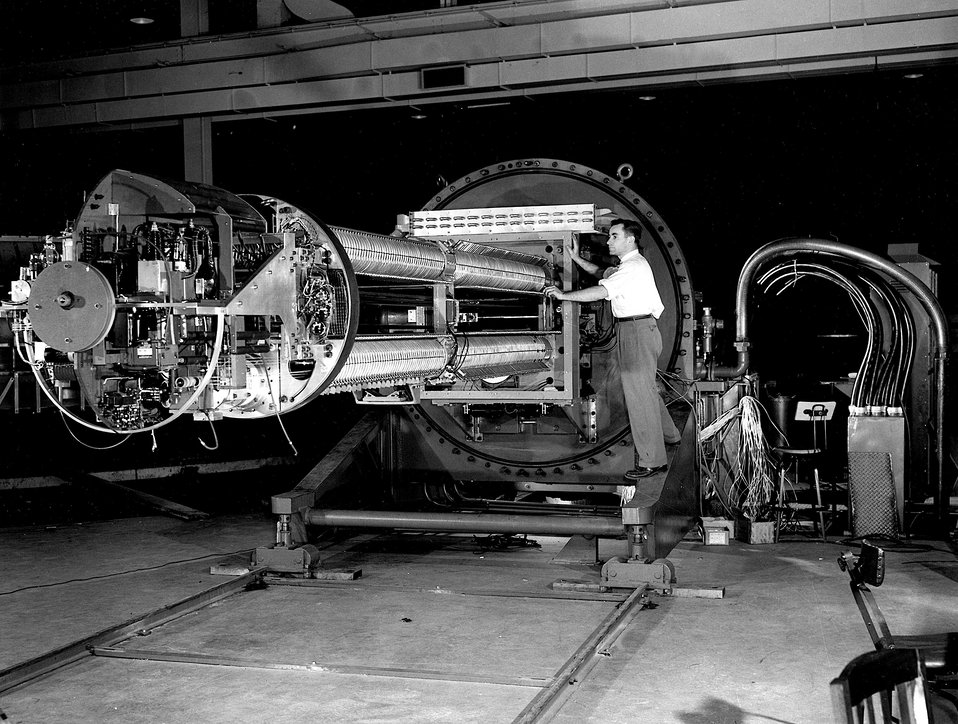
View of the cantilevered gradient column and high
voltage head of the Van de Graaff injector.